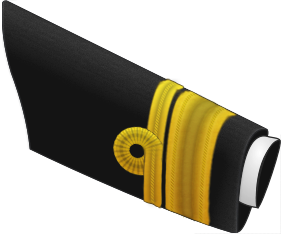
Updated Canada's Rear Admiral